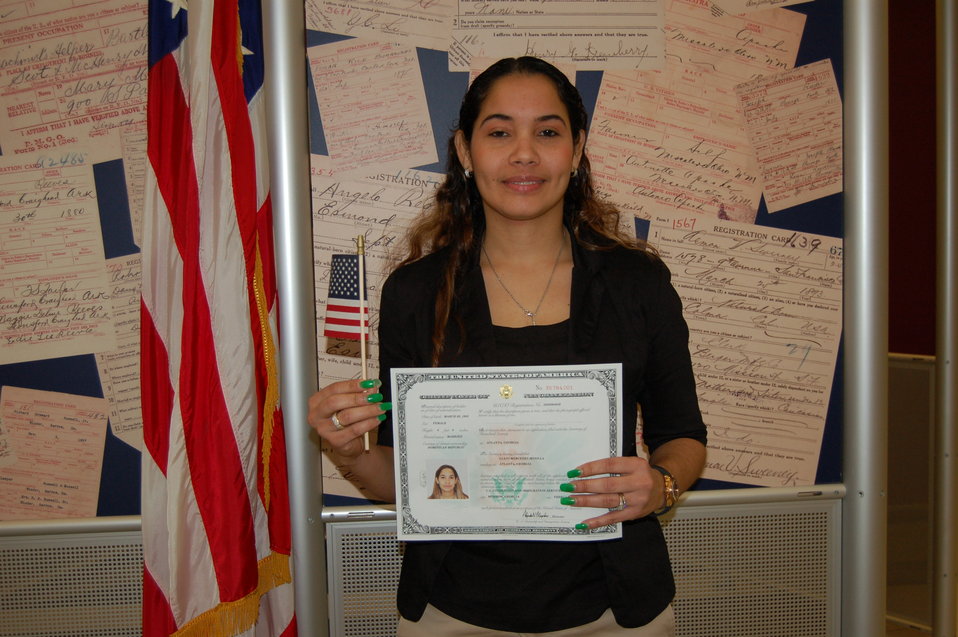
New Citizens